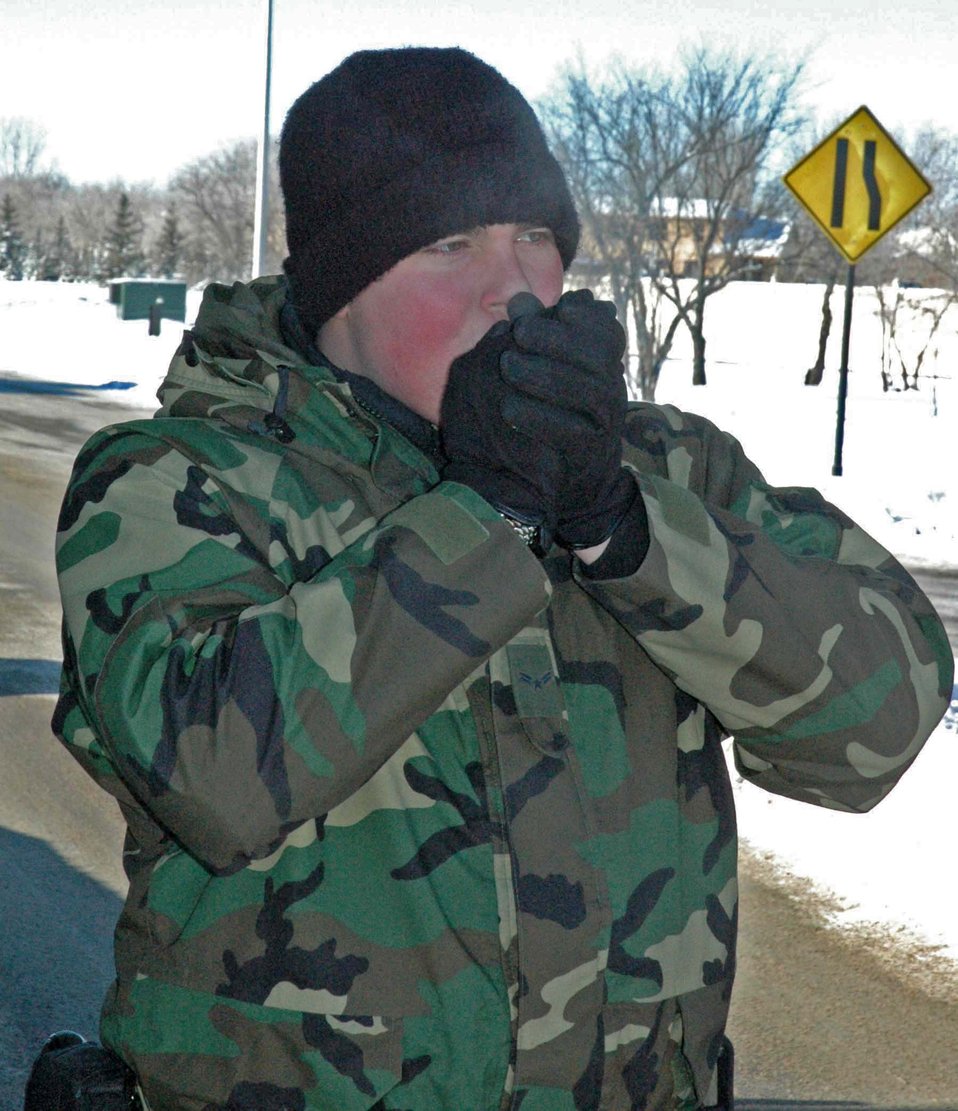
Frozen in Minot

MINOT AIR FORCE BASE, N.D. -- Airman 1st Class Travis Hedahl waits for the next vehicle to verify identification at the base entry control point here. The base recorded a record low temperature Jan. 5 of minus 33 without wind chill considerations. With the wind chill, the figure dropped to minus 51. Airman Hedahl is assigned to the 5th Security Forces Squadron.